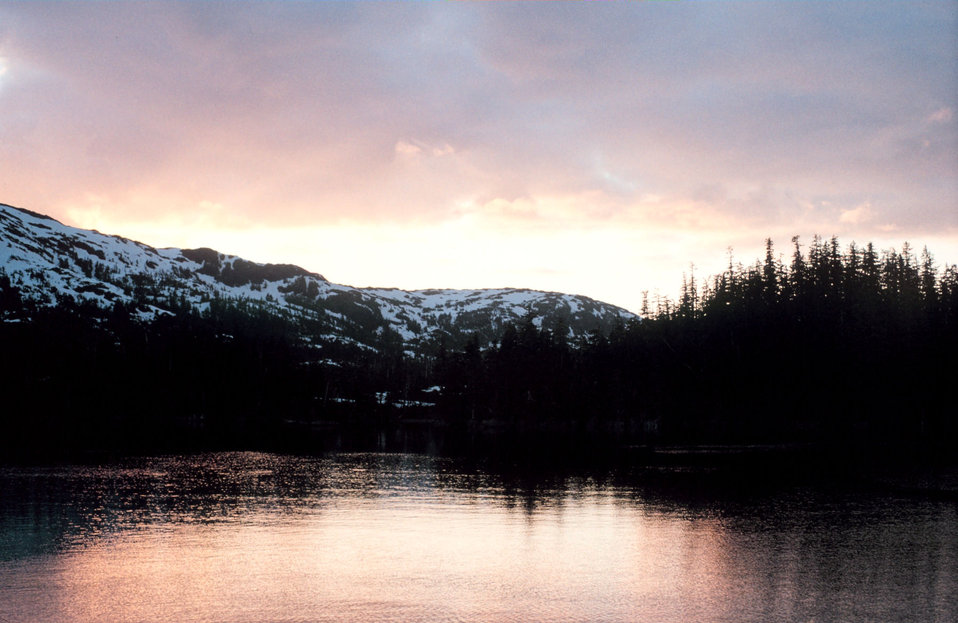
Sunset illuminating a quiet cove in Southeast Alaska.